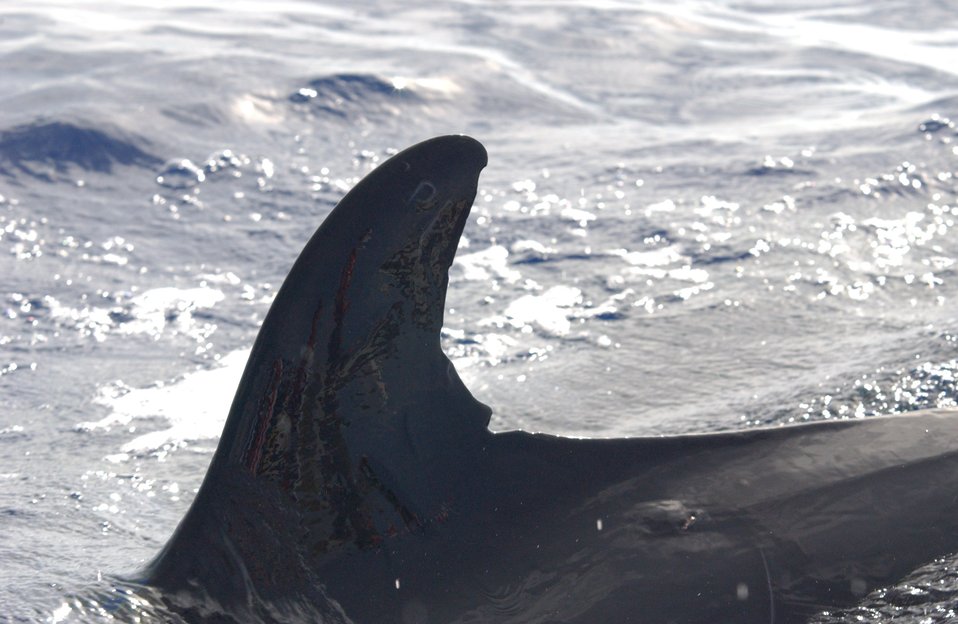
False killer whale